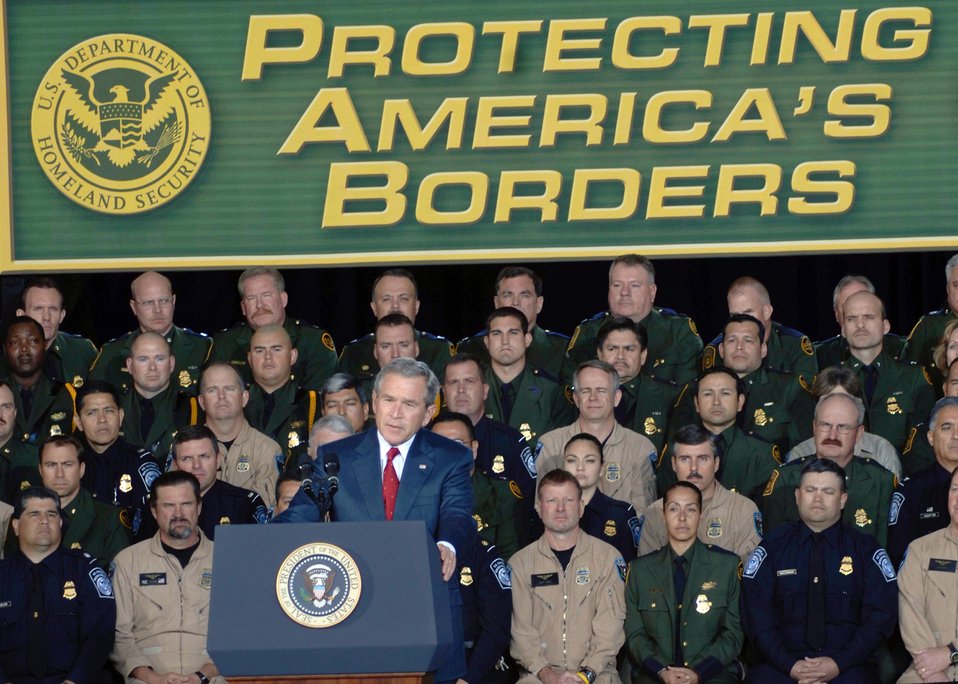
Bush visits Arizona

DAVIS-MONTHAN AIR FORCE BASE, Ariz. (AFPN) -- President George W. Bush speaks at a U.S. Border Patrol hanger. President Bush came to speak about current border patrol issues and immigration laws and policies.